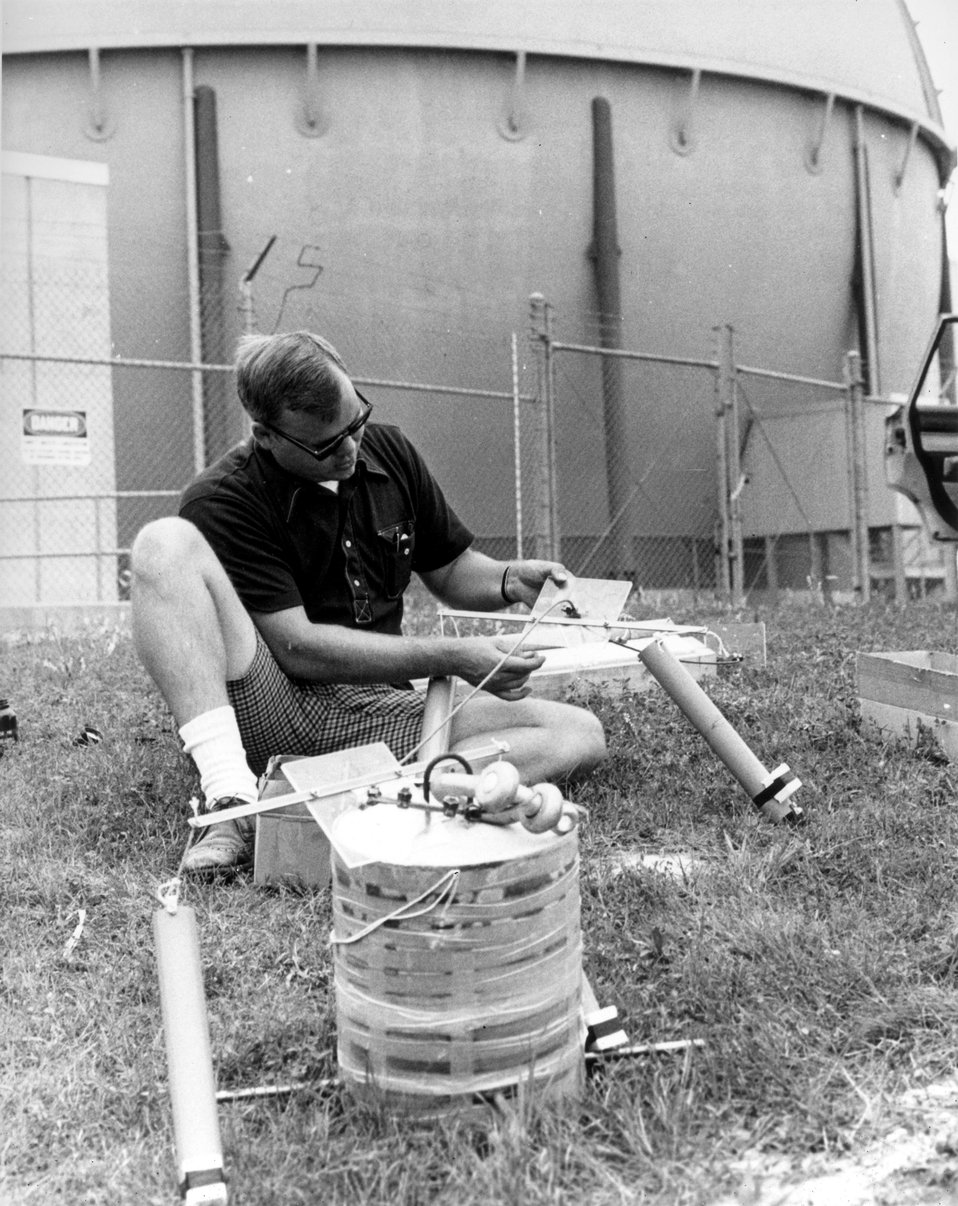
A scientist from Argonne prepares a radiometry buoy for placement in Lake Michigan.